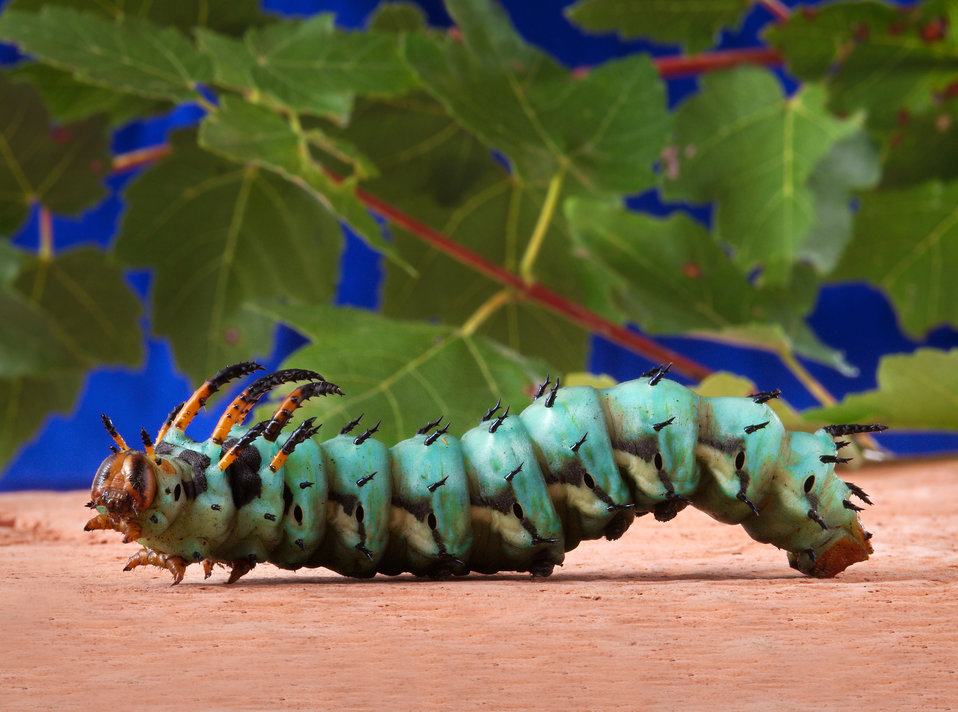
This 2008 image depicts a left lateral view of a Hickory Horned Devil caterpillar as it was wriggling across a Georgia red clay surface. It's hard to imagine, but keep in mind that this caterpillar is actually a developmental stage, or 'instar', through which the creature passes before becoming an adult, or 'imago' Regal Moth, Citheronia regalis. Just prior to entering its pupal stage, where it will metamorphose into the adult moth, the caterpillar will change its appearance, adopting more of a turquoise coloration, which looked to be the case in the specimen photographed here.